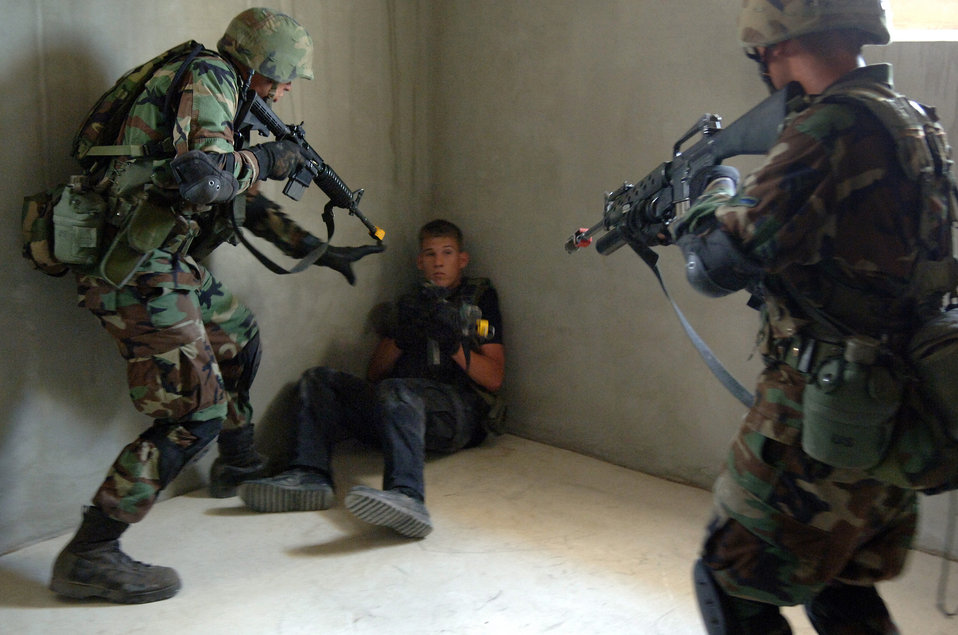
Experience a key training tool at Security Forces Academy

Airmen training at the Security Forces Academy yell instructions to Staff Sgt. Daniel James during a simulated terrorist extraction at Camp Bullis, Texas, on Wednesday, July 19. The 343rd Training Squadron instructs Airmen on air base defense and combat operations. Sergeant James is an instructor for the 343rd TRS.